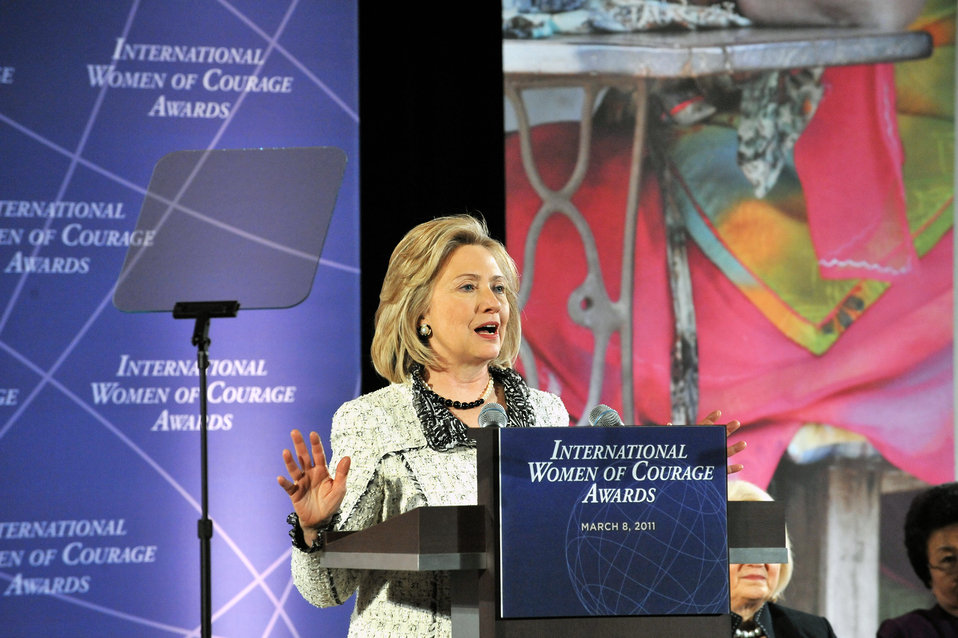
Secretary Clinton Delivers Remarks at 2011 International Women of Courage Awards Ceremony

U.S. Secretary of State Hillary Rodham Clinton, center right, and First Lady of the United States Michelle Obama, center left, pose for a photo with the honorees of the 2011 International Women of Courage Awards at the U.S. Department of State in Washington, D.C., on March 8, 2011.